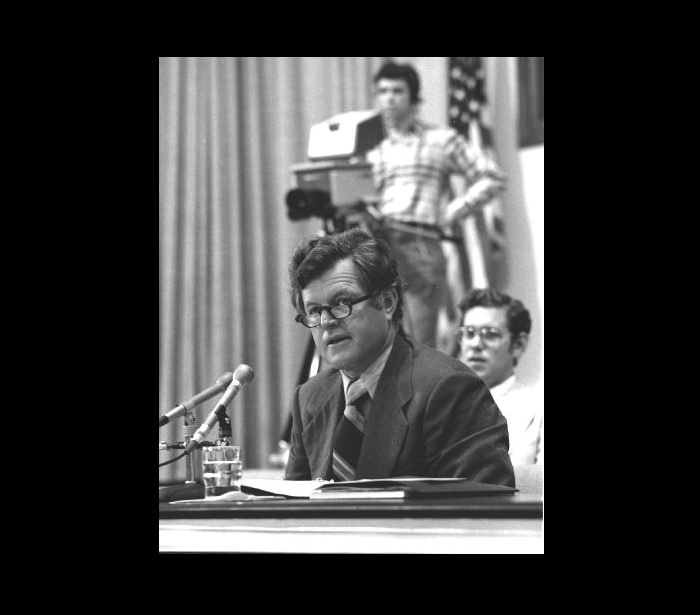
Senator Edward M. Kennedy, Chairman, at Senate Hearing on Legionnaires' Disease held at CDC on 11/9/77.